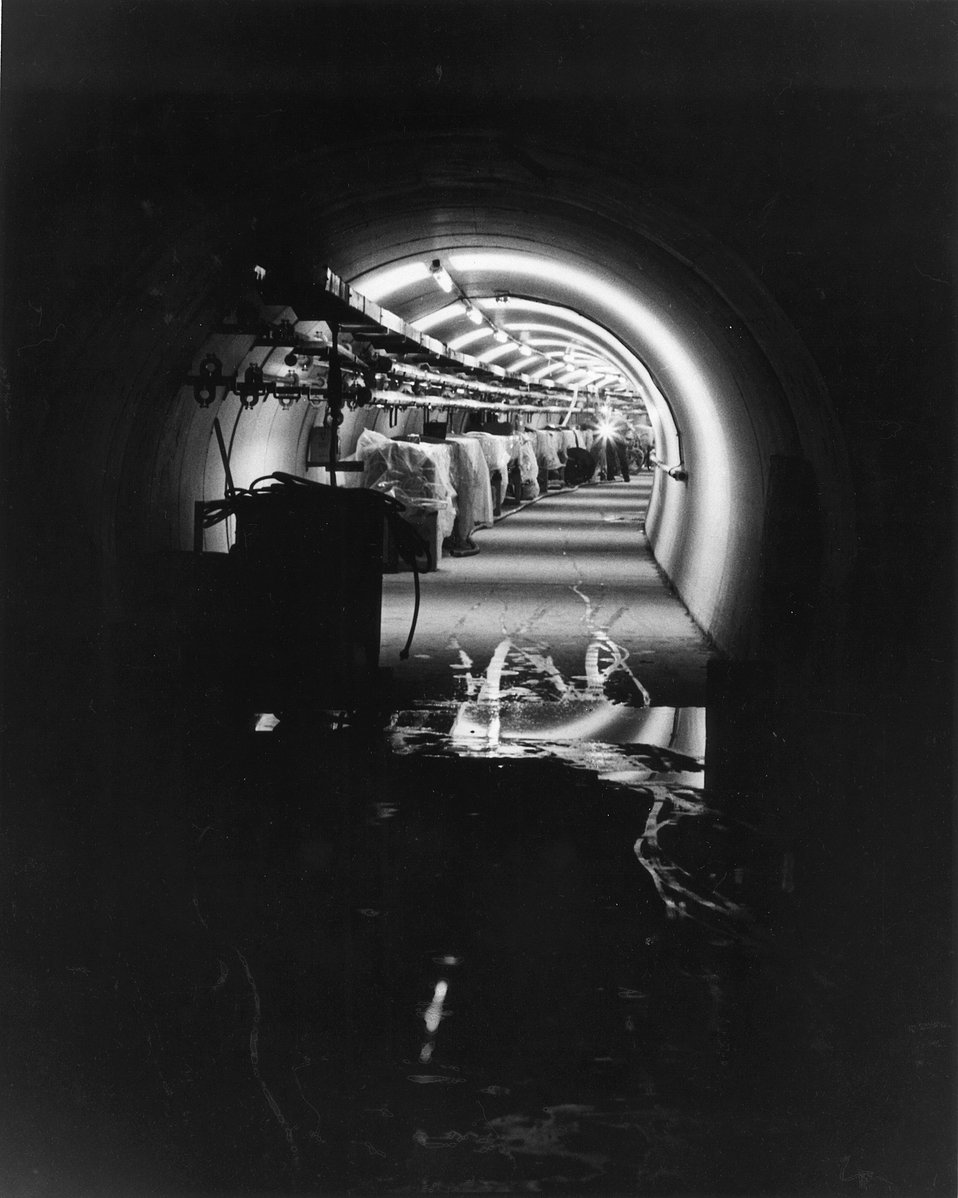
Appearing deceptively like a subway tunnel, a nearly completed section of the main ring of the AEC NAL's new 200 BeV Proton Synchroton receives the attention of workmen installed electrical and water systems. c.1970